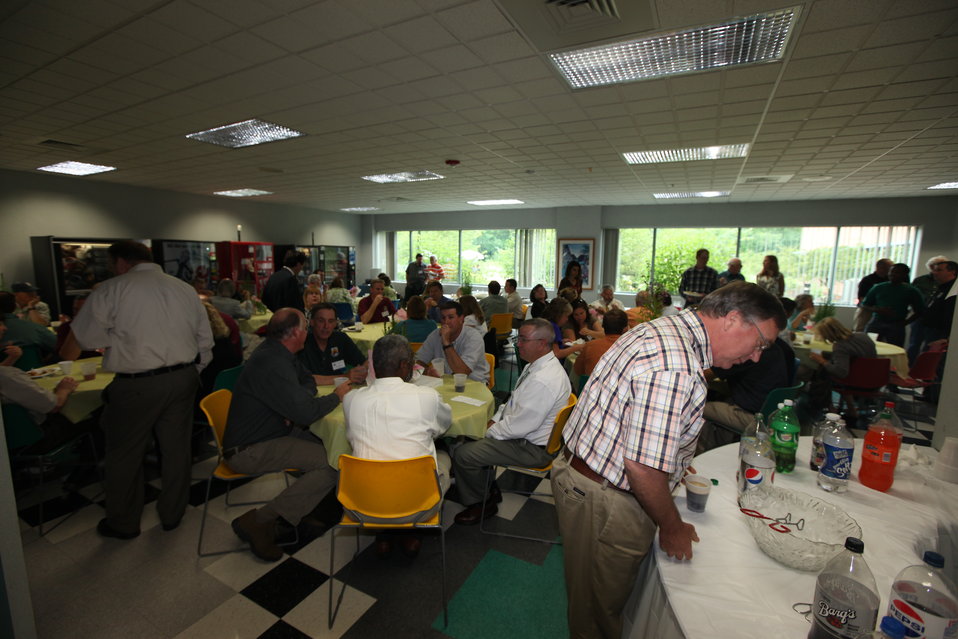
Northeast Region Employee Appreciation Awards

Luncheon